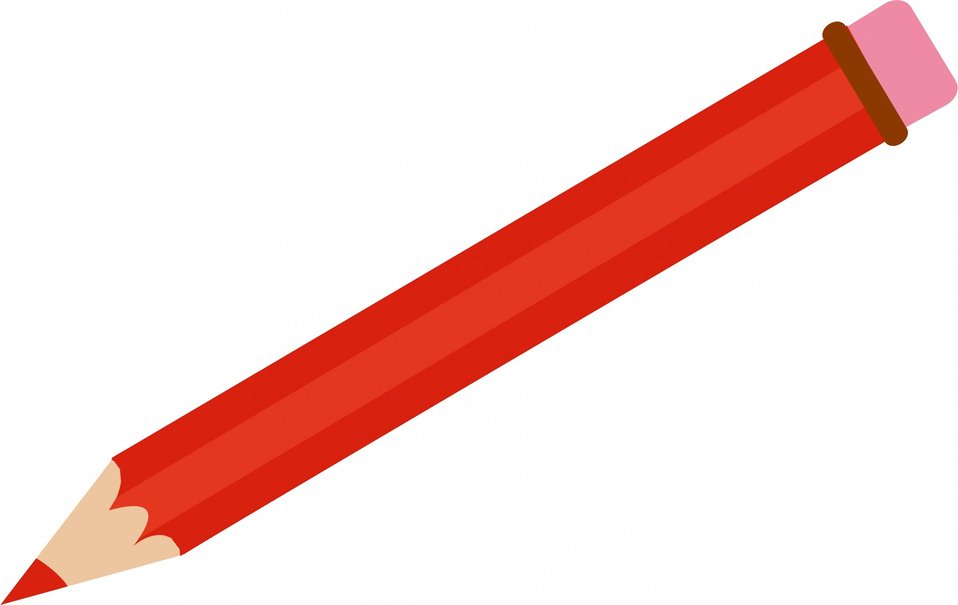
Red pencil clipart

Illustration of a red drawing pencil..